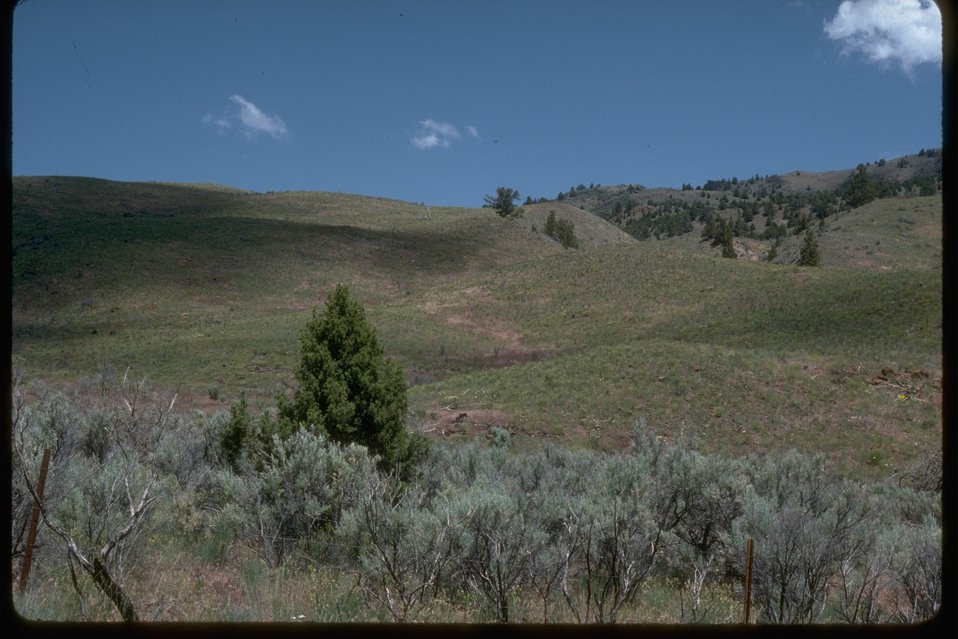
Results of prescribed fire in sagebrush steppe.